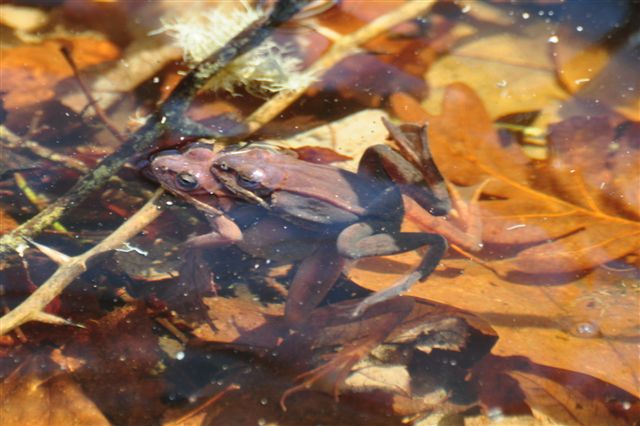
Frogs in the Kettle Pond vernal pool at Ninigret National Wildlife Refuge, Rhode Island.